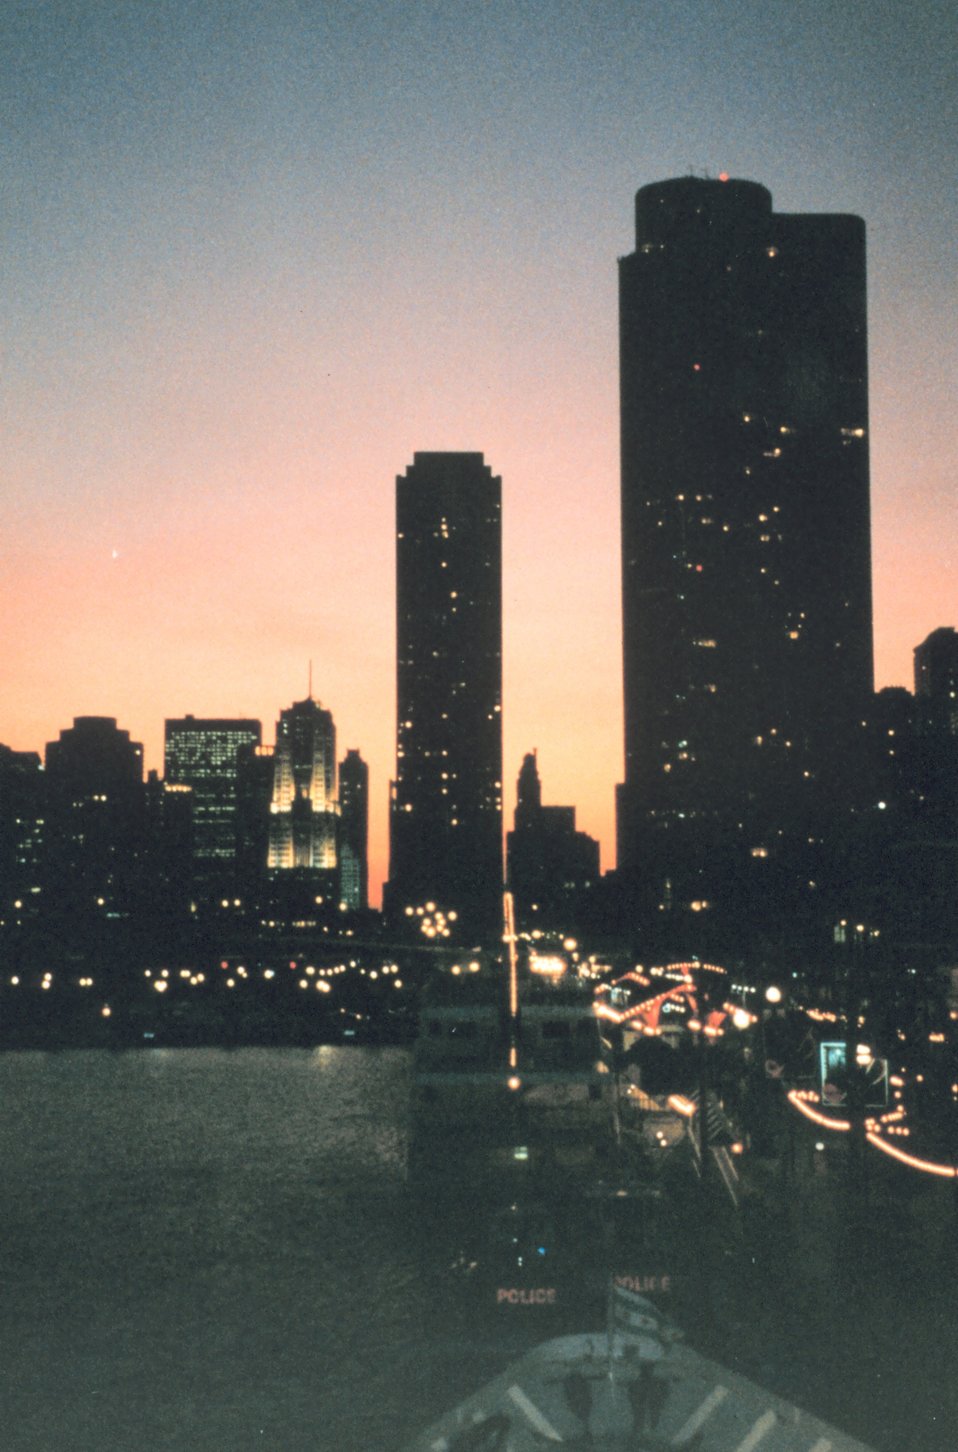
Chicago skyline at dusk